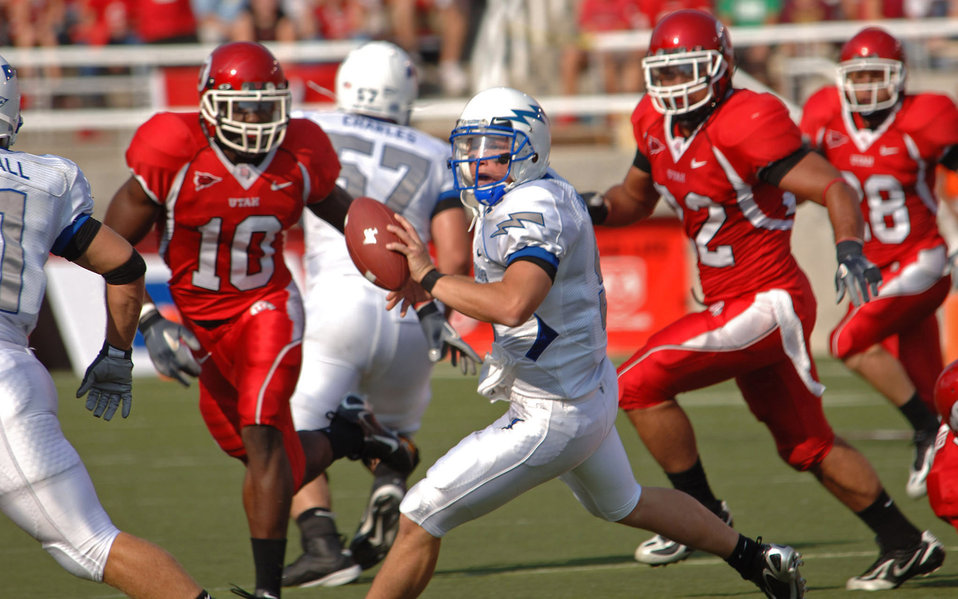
Football: Falcon defense stops Utah, 20-12

U.S. Air Force Academy Falcons quarterback Shaun Carney looks to pitch on the option play to elude Utah's Stevenson Sylvester, 10, during Air Force's 20-12 win Sept. 8 in Salt Lake City.